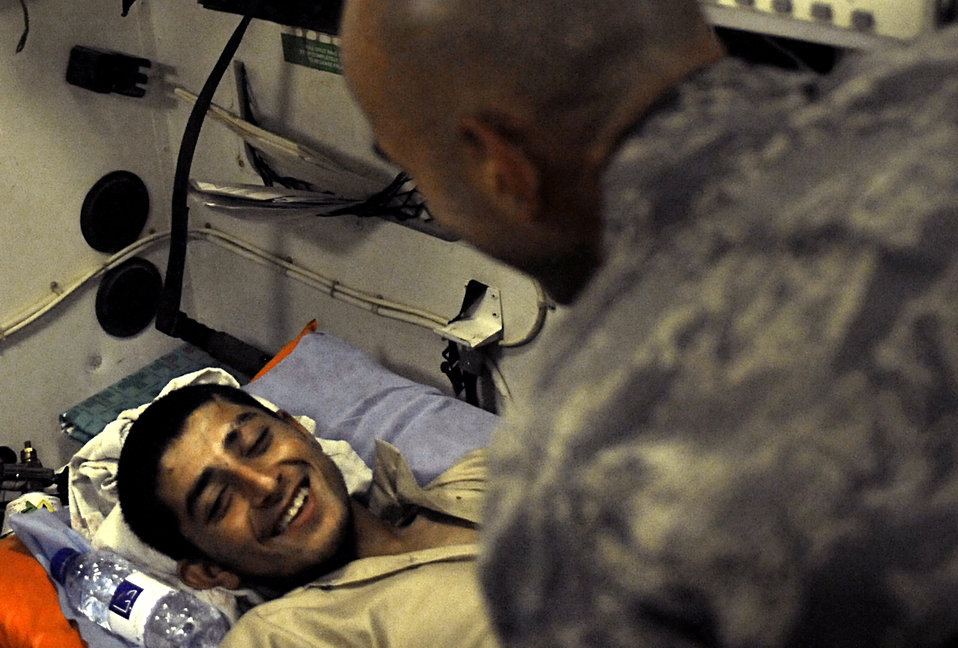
Airmen coordinate smooth transition of wounded to higher medical care

Capt. Jac Solghan comforts an Afghan boy who is returning home after weeks of care and rehabilitation by U.S. and Afghan medical personnel June 23 at Camp Bastion, Afghanistan. The boy lost his leg when a landmine exploded as he was walking along a road. Captain Solghan is the Aeromedical Evacuation Liaison Team flight clinical coordinator.